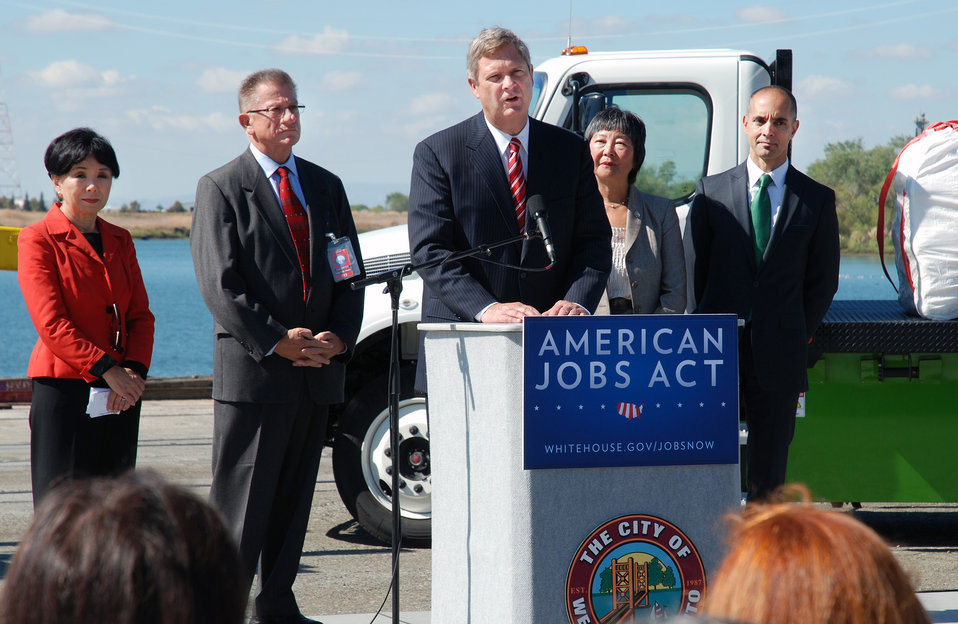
Agriculture Secretary Tom Vilsack speaking at the American Jobs Act media availability at the Port of Sacramento, West Sacramento, CA, on Monday, September 26, 2011. Also in attendance were Congresswoman Doris Matsui (far left) and West Sacramento Mayor Christopher Cabaldon (far right).